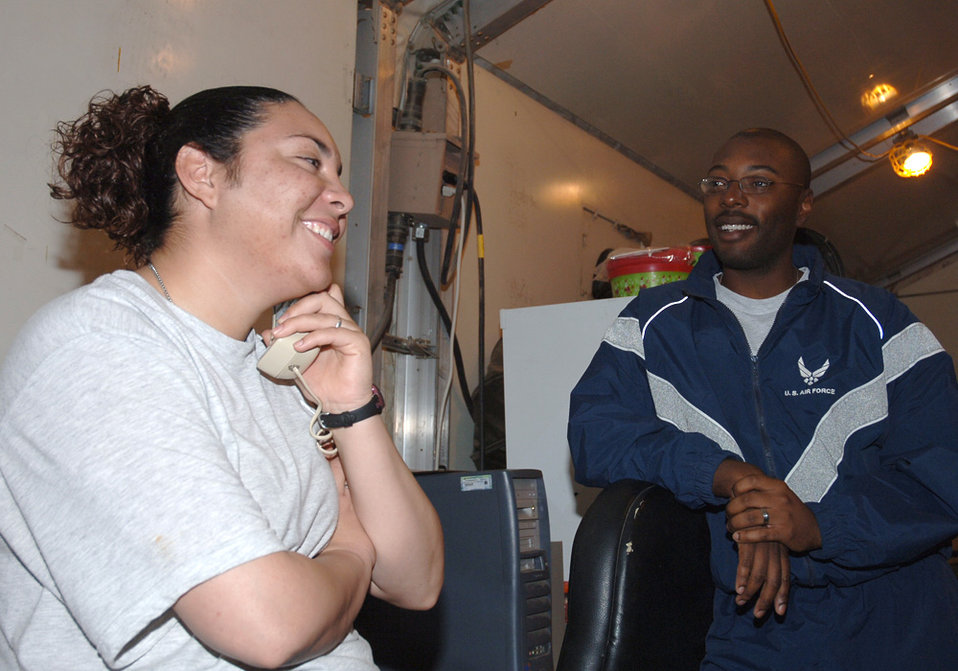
Talking with the President

BAGHDAD INTERNATIONAL AIRPORT, Iraq (AFPN) -- Staff Sgt. Melina Russell talks with President George W. Bush Christmas Eve as her husband, Staff Sgt. Frank Russell looks on. They are both deployed from the 96th Security Forces Squadron at Eglin Air Force Base, Fla.